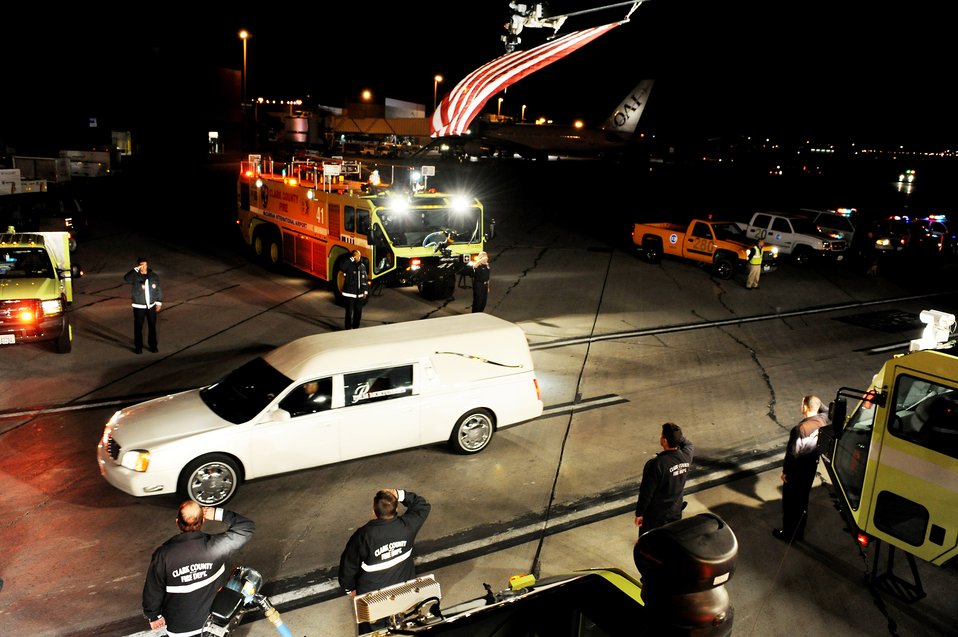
Air Force pilot missing in action from Vietnam War is identified

Firemen with the Clark County Fire Department pay their respects as the hearse containing the remains of Maj. Russell C. Goodman leaves McCarran International Airport in Las Vegas Jan 12, 2010. Major Goodman was killed in action in Vietnam on Feb. 20, 1967, when his F-4 Phantom was shot down.